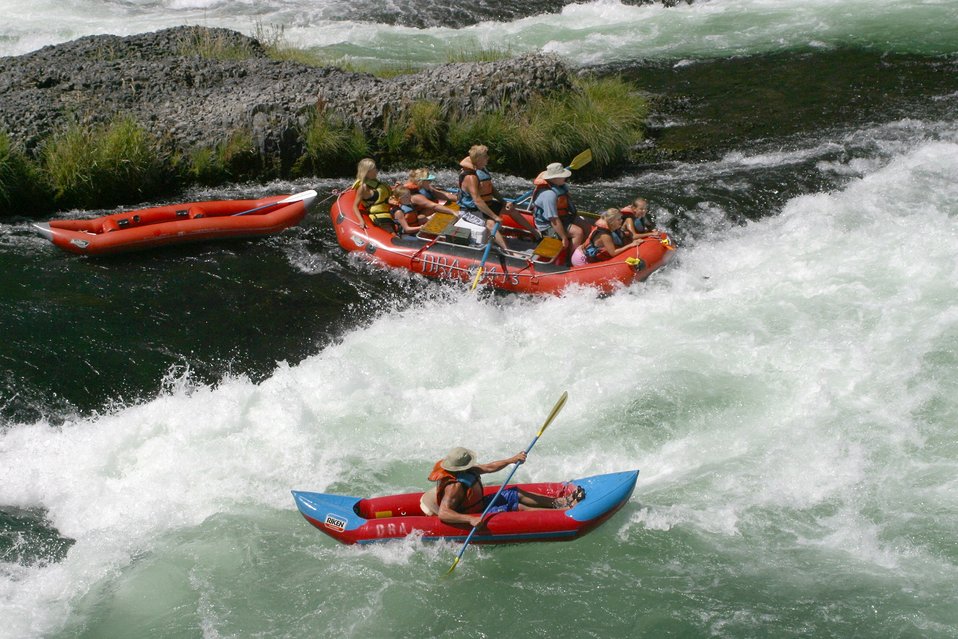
Oak Springs is a Class IV Rapids. The left channel has shallow rocks, large standing waves, turbulent currents and a large hole during high flows. The right channel has a large hole, shallow rocks, and turbulent currents. 7/26/03 Pelton Dam 3600 cfs: Moody Rapids 4300 cfs.